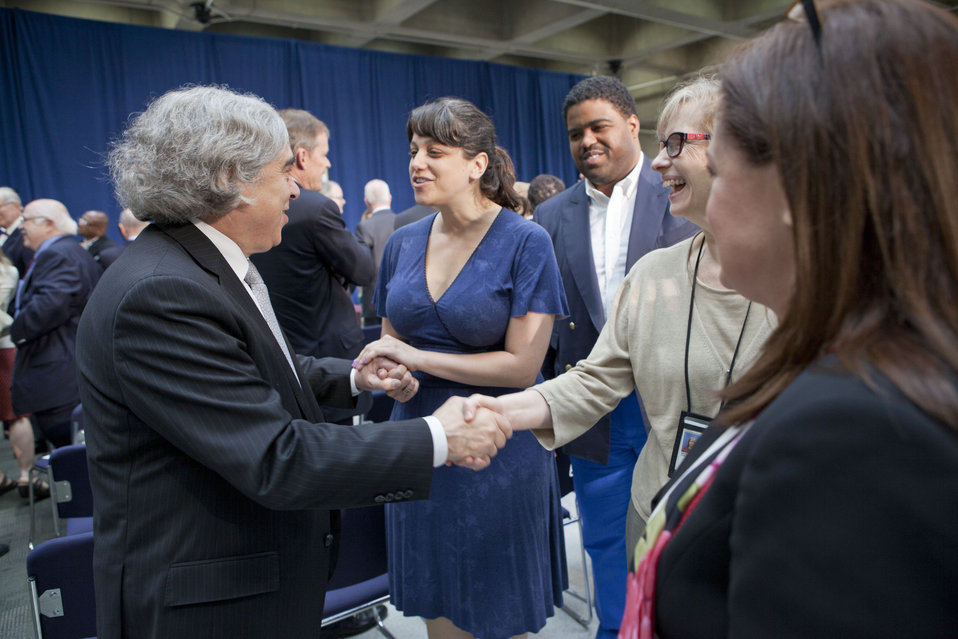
Secretary Moniz Meets DOE Employees

After the ceremony, attending members of the Department of Energy community were able to meet Secretary Moniz. Many friends and colleagues welcomed him back to the Department of Energy.